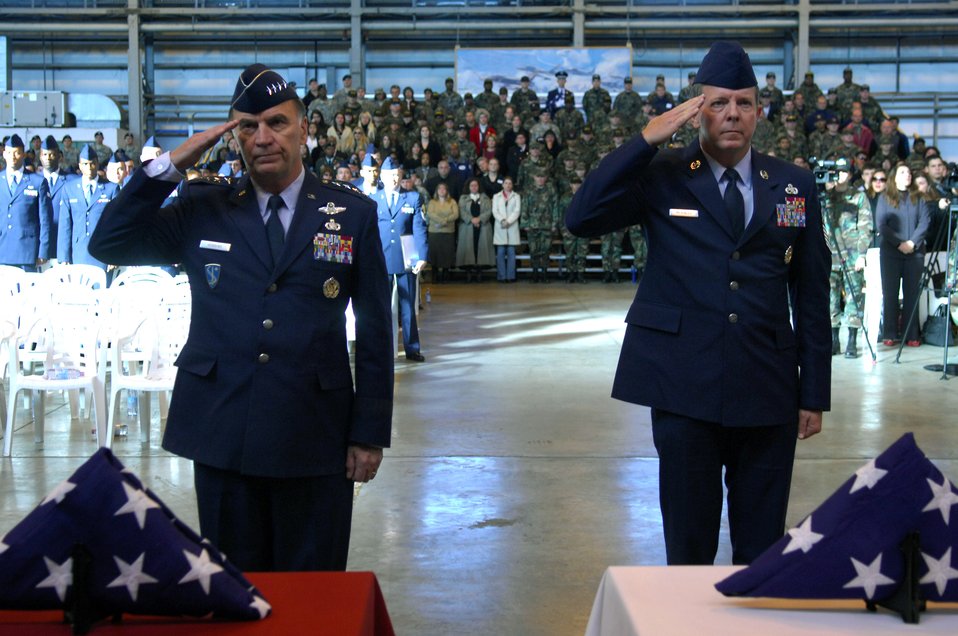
Fallen Airmen, Soldiers honored at Aviano

Gen. William T. Hobbins and Chief Master Sgt. of the Air Force Rodney J. McKinley issue a final salute during a memorial ceremony held Nov. 15 at Aviano Air Base, Italy, in honor of the six servicemembers who were killed when an Army UH-60 Black Hawk helicopter attached to the 1st Battalion, 214th Aviation Regiment crashed Nov. 8, 22 miles southwest of Aviano, Italy. General Hobbins is the U.S. Air Forces in Europe commander.